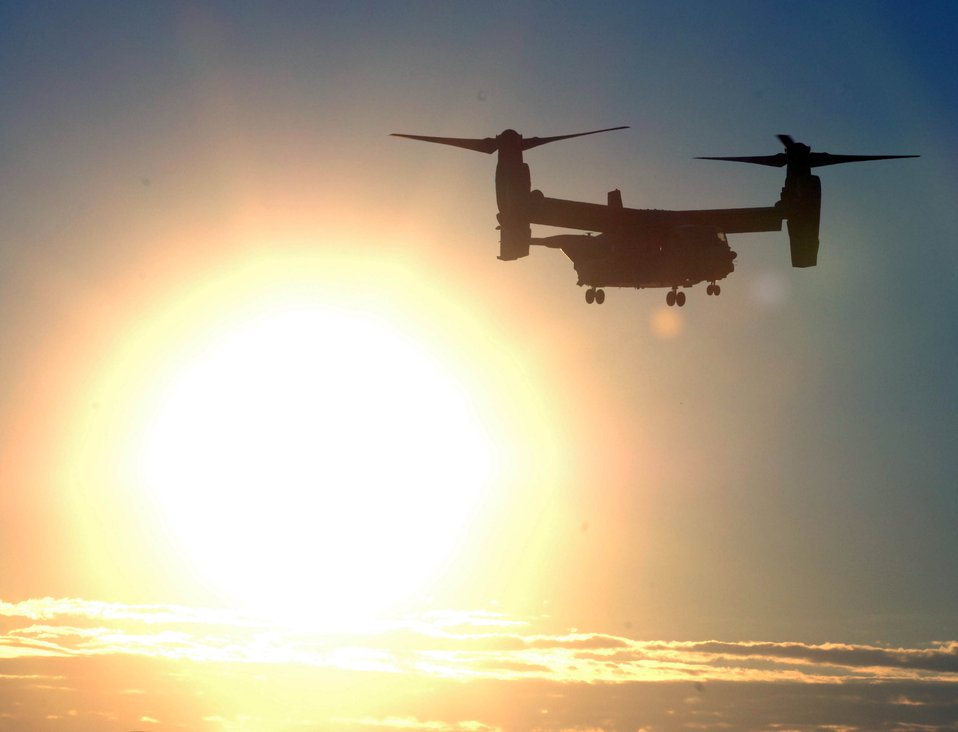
CV-22 Osprey flyover at Air Force Memorial

A CV-22 Osprey tilt rotor aircraft flies enroute to the Pentagon Oct. 13 in Arlington, Va. Aircraft including the CV-22 are landing at the Pentagon south parking lot and will be on display during the Air Force open house for the opening ceremonies of the Air Force Memorial Oct. 14.